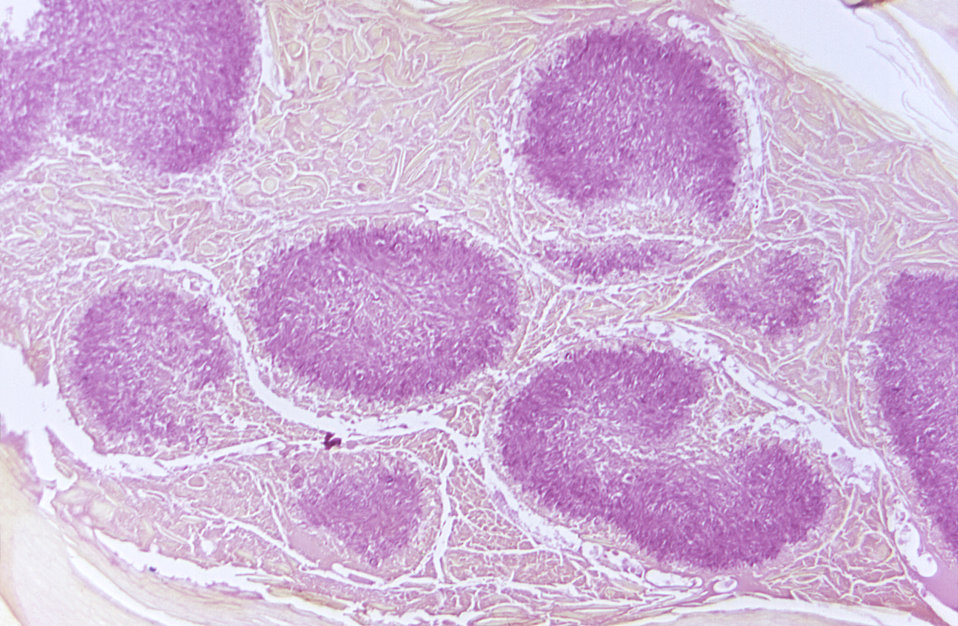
Magnified 100X, this photomicrograph revealed some of the cytoarchitectural morphology associated with a number of mycetoma granules, which were found to be present in this human tissue sample of unknown origin.